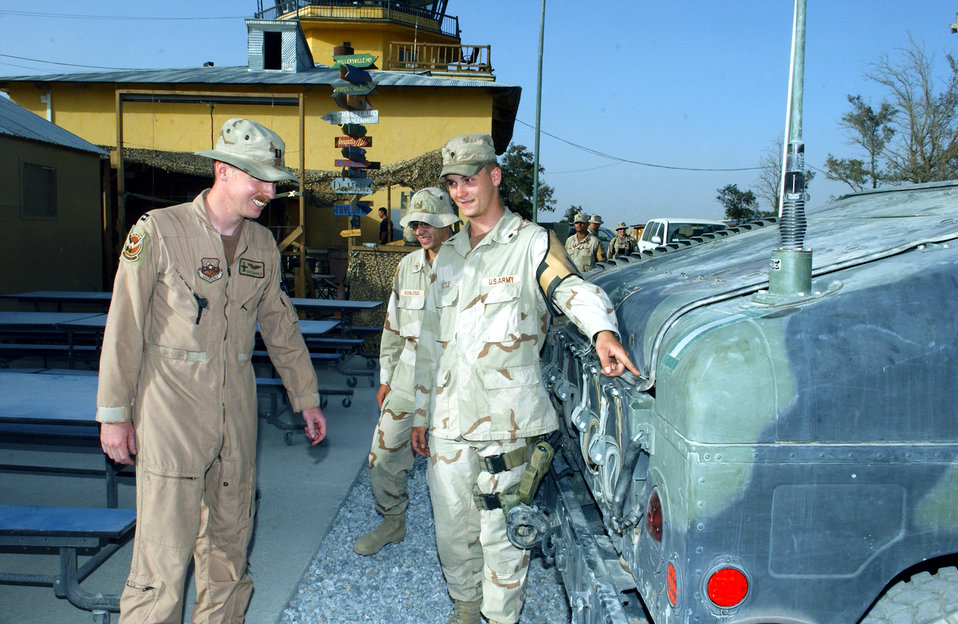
A-10s to the rescue

BAGRAM AIR BASE, Afghanistan -- Army Spc. Patrick Little shows Capt. Scott the bullet holes the Humvee he was riding in received during a convoy ambush in Afghanistan. Captain Scott and his wingman, Capt. Andrew, were on alert and responded to the call in their A-10 Thunderbolt IIs, breaking up the ambush and allowing the convoy to return home. Speciailst Little is assigned to the 101st Airborne Division, and Captains Scott and Andrew, whose last names are withheld for security reasons, are assigned to the 355th Expeditionary Fighter Squadron here.